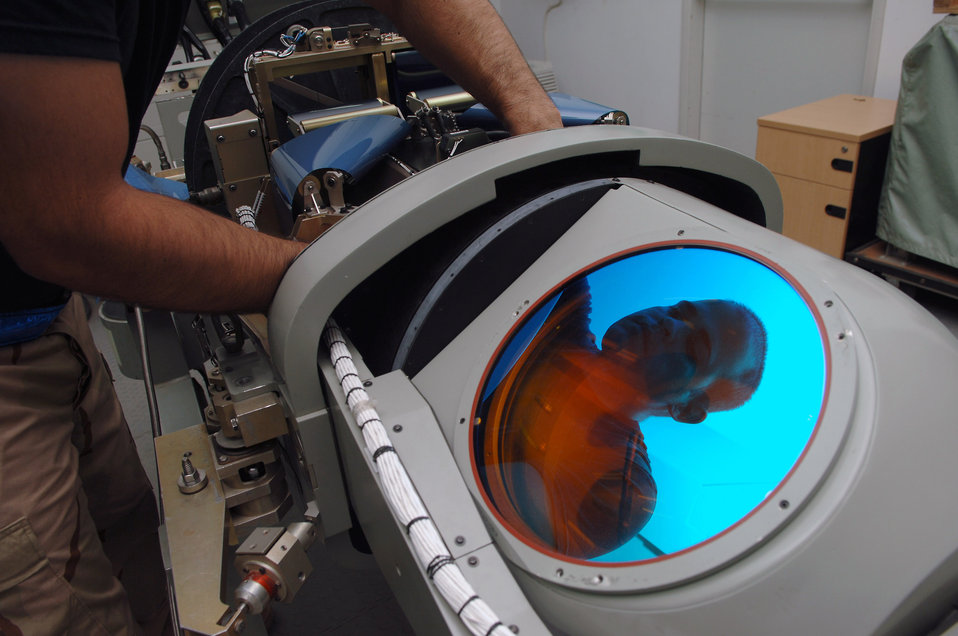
Say cheese!

Senior Airman Charlie Lorenzo loads test film into an onboard camera for a U-2 mission at an air base in Southwest Asia, April 17. Airman Lorenzo is with the 380th Expeditionary Aircraft Maintenance Squadron.